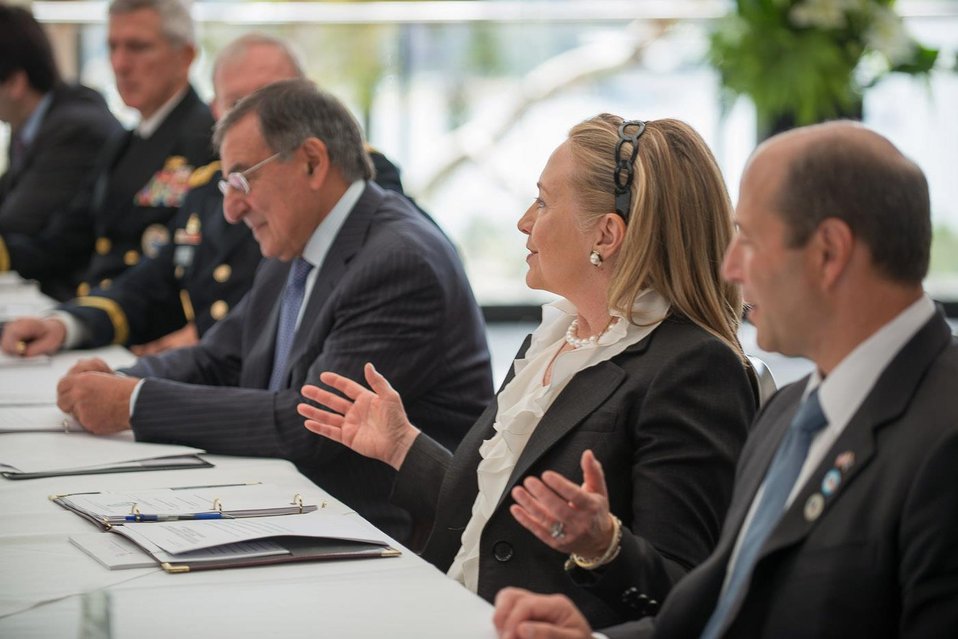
Ambassador Bleich, Secretaries Clinton and Panetta, and Vice Admiral Harris Participate in a Working Lunch

From right to left, U.S. Ambassador to Australia Jeff Bleich, U.S. Secretary of State Hillary Rodham Clinton, U.S. Secretary of Defense Leon Panetta, and Vice Admiral Harry B. Harris, Jr. participate in the AUSMIN working lunch in Perth, Australia, November 14, 2012. [U.S. Embassy in Canberra, Australia photo by Travis Longmore/ Public Domain]